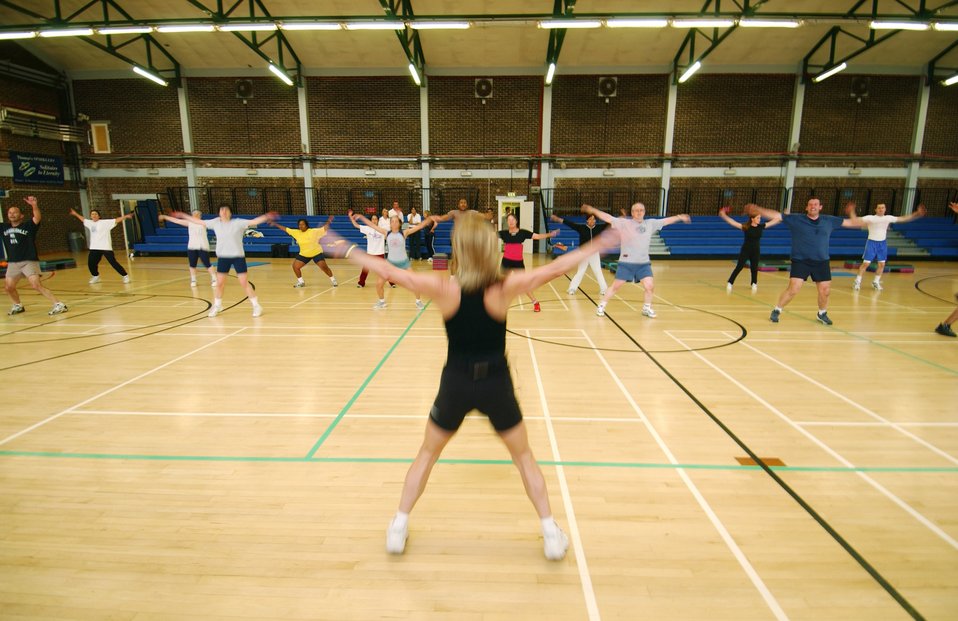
Airmen brace for new fitness test

ROYAL AIR FORCE MENWITH HILL, England -- A group of people here participate in a circuit training session which includes step aerobics, weights, stretching, sit-ups, push-ups, boxing and skipping. Many units across the Air Force have adopted circuit training workouts as one way to help prepare Airmen for the physical fitness test.